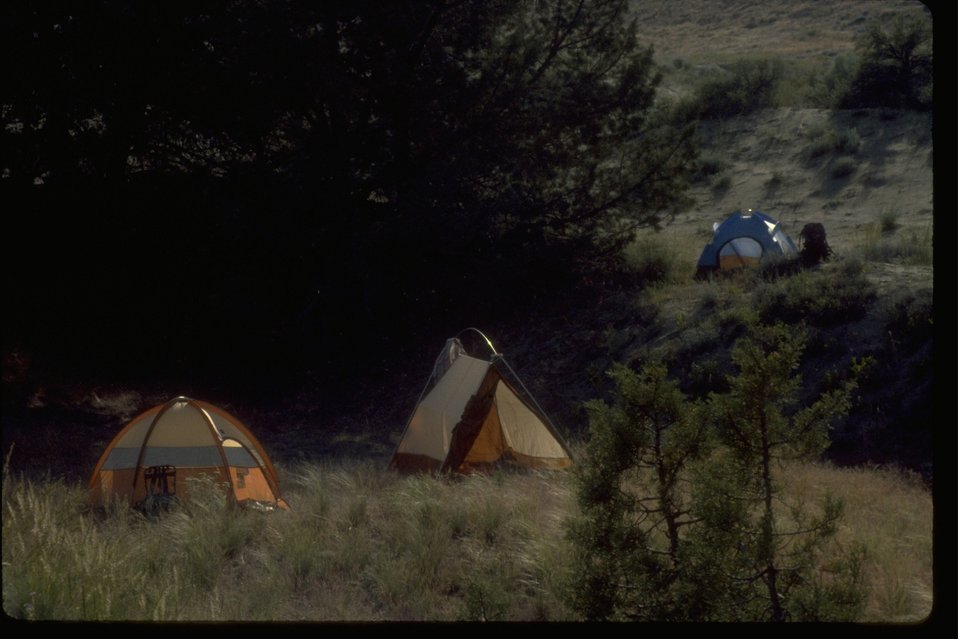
Tent campsite in the Juniper Forest Management Area.